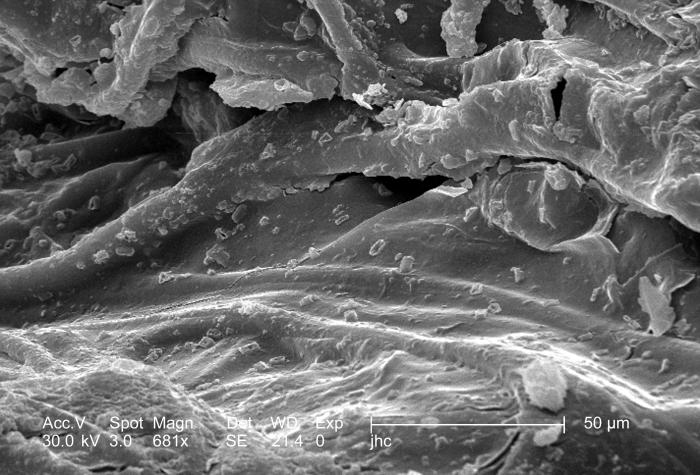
At a moderately high magnification of 681x this scanning electron micrograph (SEM) depicted some of the ultrastructural details made visible of the surface of an unidentified wasps' nest found on the ground in the Decatur, Georgia suburbs. Note that the nest material takes on the appearance of woven fibers embedded in a glue-like matrix, very similar to the way in which rebar, i.e., iron textured rods, is embedding in concrete to reinforce the building material. Scattered amongst the matrix are small cellulose particulates.